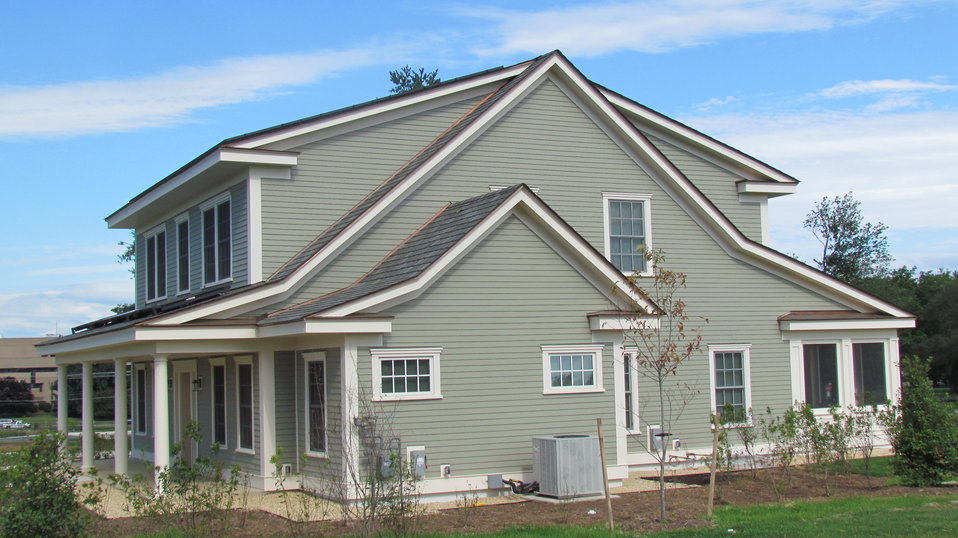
Front and east side of completed NZERTF.